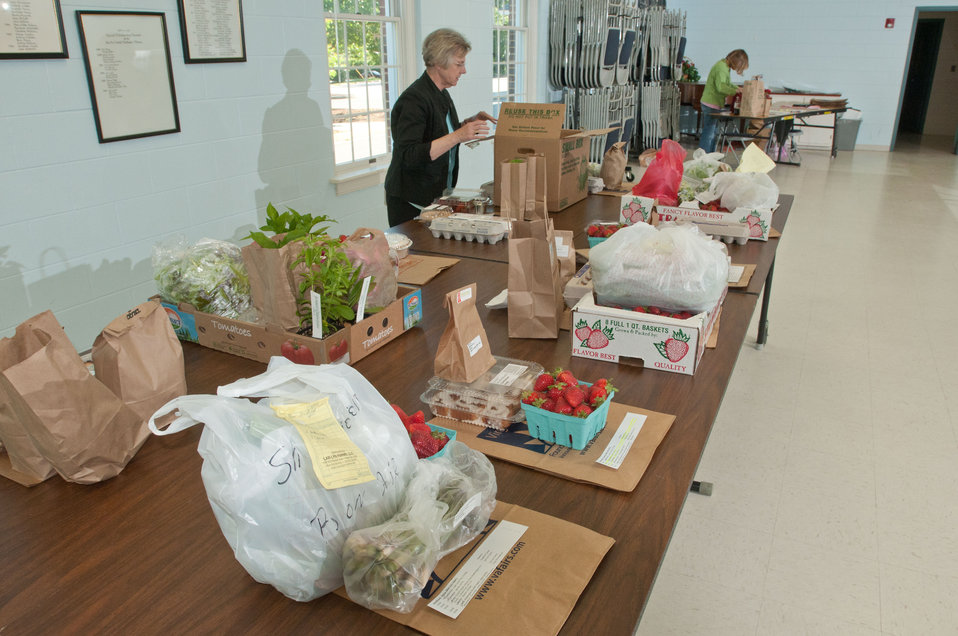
Fall Line Farms volunteer Jane Tucker provides key help at the Bon Air United Methodist Church pick-up point, in Richmond, VA, on Thursday, May 5, 2011. Volunteers get free membership for setting up, operating and assisting other members with their weekly pickup. This is one of several locations in the Richmond area that are open every Thursday afternoon. This local food hub offers a wide variety of household food staples and specialty items. Members can pick their customized orders from an ever changing inventory of fruits, vegetables, meats, soaps, eggs, cheeses, flowers, honey, pastas, sauces, syrups, baked goods, mushrooms, flour and grains. Suppliers post what they have on a Lulus Local Food online listing and customers can make their selection.